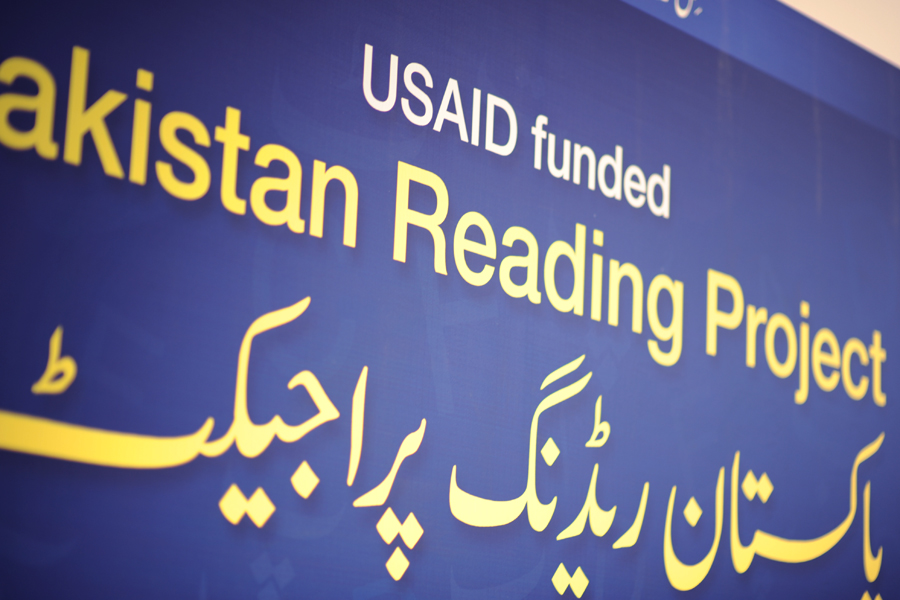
United States and Pakistan Launch the Pakistan Reading Project